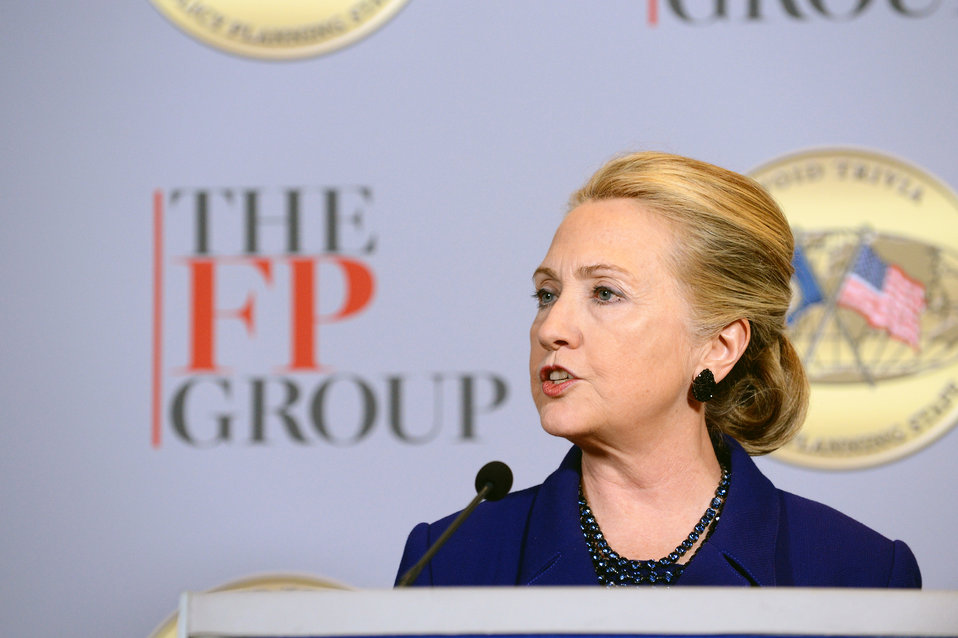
Secretary Clinton Delivers Remarks at Foreign Policy Group’s Transformational Trends 2013

U.S. Secretary of State Hillary Rodham Clinton delivers remarks at Foreign Policy Group’s Transformational Trends 2013 at the Newseum in Washington, D.C., November 29, 2012.